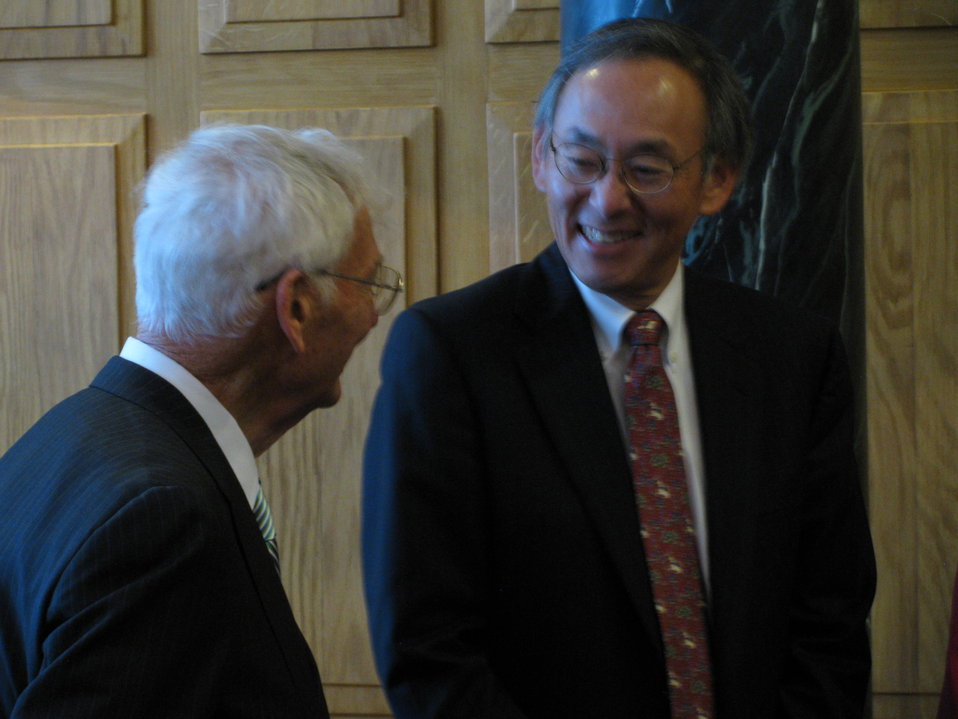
Secretary Chu and Daniel Rooney, the United States Ambassador to Ireland – as well as the former owner of the mighty Pittsburgh Steelers. The Ambassador briefed Secretary Chu about Ireland's ambitions toward renewable energy - a goal of 40 percent by 2020.